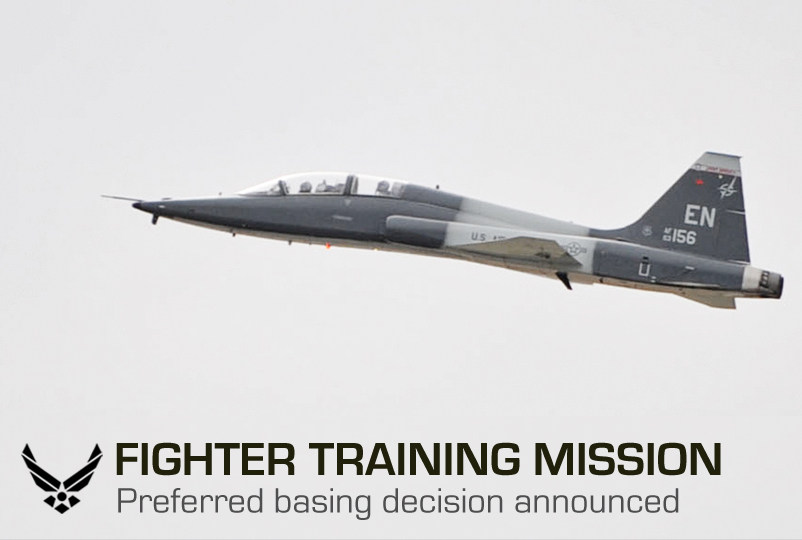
Fighter training mission